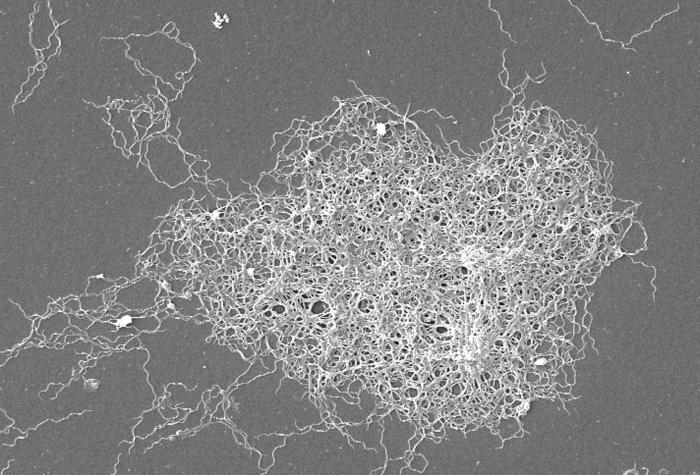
This scanning electron micrograph depicts a grouping of numerous Gram-negative, anaerobic, Borrelia burgdorferi bacteria, which had been derived from a pure culture.